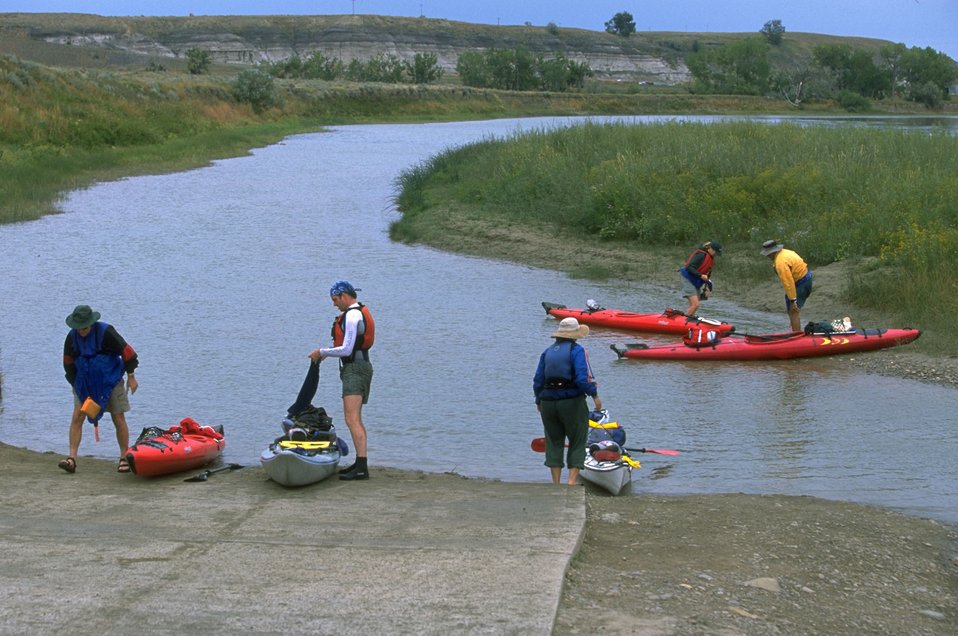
Boats at Coal Banks Landing